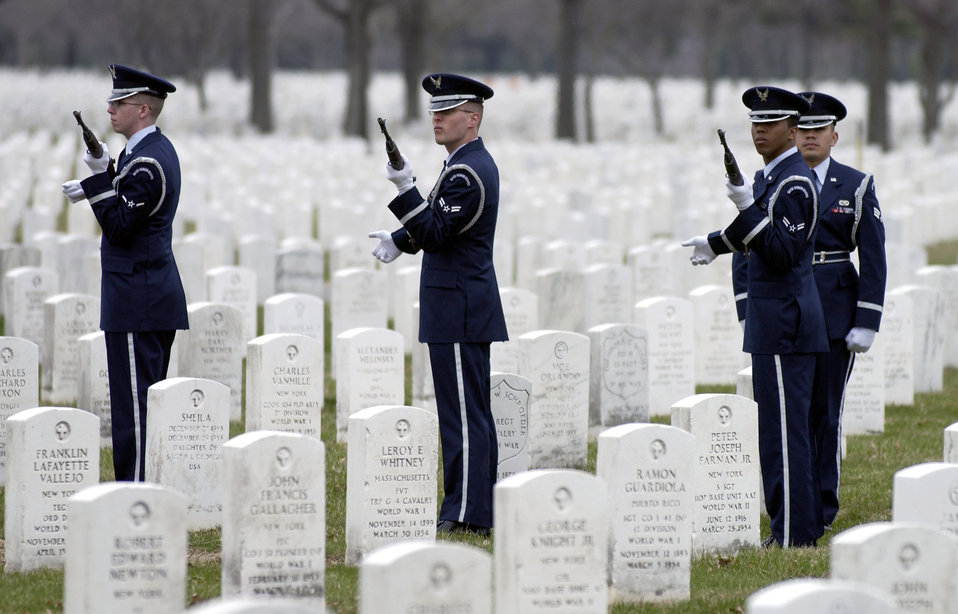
Twenty-one gun salute

MCGUIRE AIR FORCE BASE, N.J. -- Honor Guard members of the 305th Air Mobility Wing, McGuire Air Force Base, New Jersey, perform a twenty-one gun salute for the funeral of Master Sgt. Michael Maltz of the 38th Rescue Squadron, Moody Air Force Base, Georgia. Maltz was killed when his Pave Hawk helicopter crashed 18 miles north of Ghanzi, Afghanistan on the way to rescue Afghan children March 23. The funeral took place in Long Island, New York on April 3.